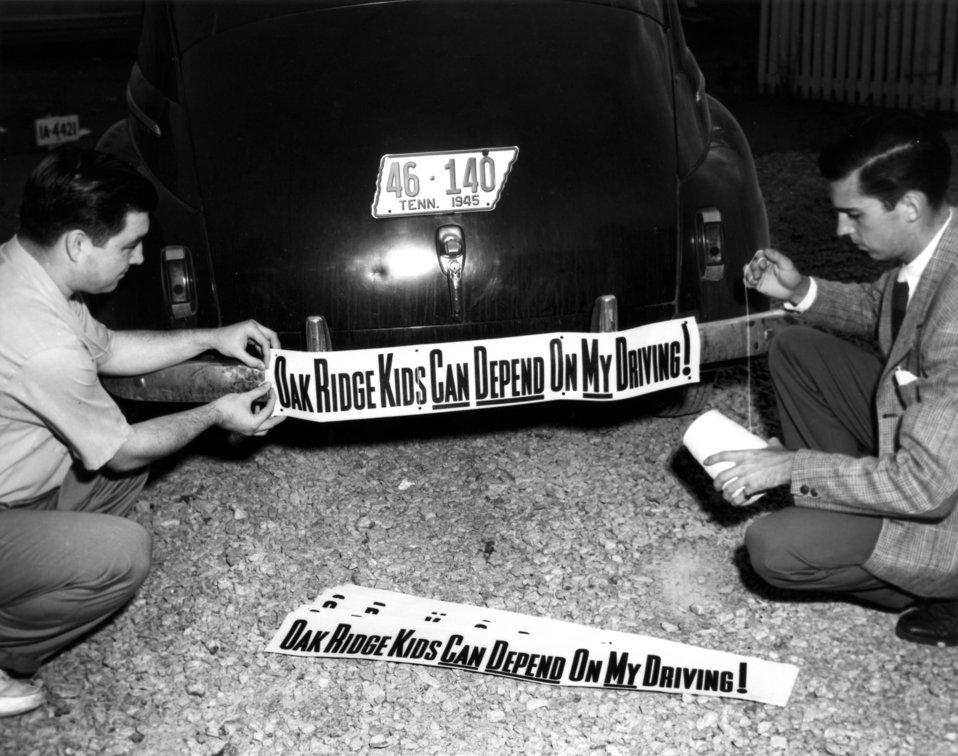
Daily Life at Oak Ridge